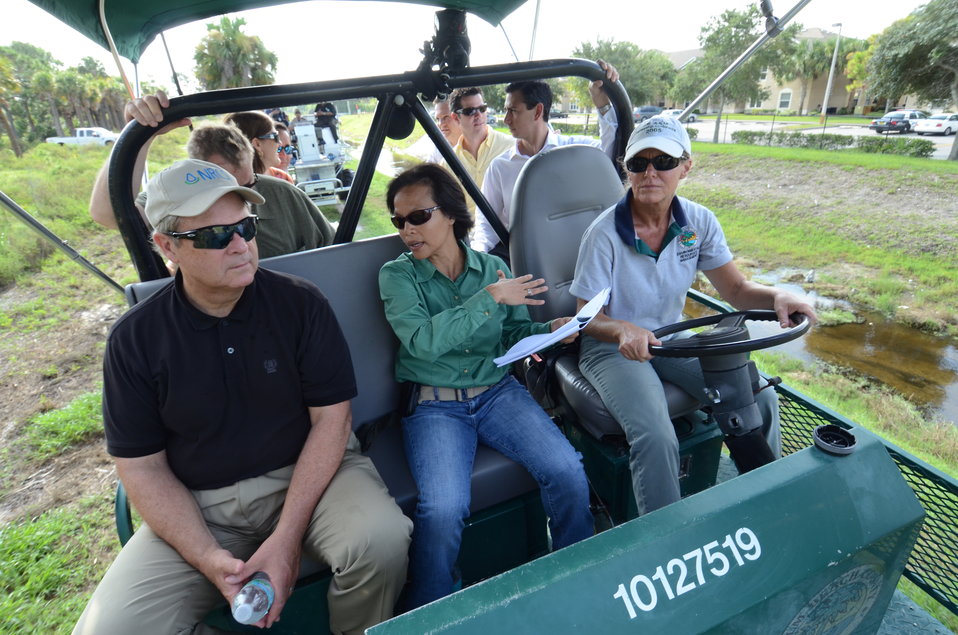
Agriculture Secretary Tom Vilsack rides along with USDA, National Resources Conservation Service Nga Watts and Palm Beach County Board of County Commissioners, Department of Environmental Resource Management, Natural Resources Stewardship Environmental Program Supervisor Brenda Hovde (driving) to see the Winding Waters Natural Area.